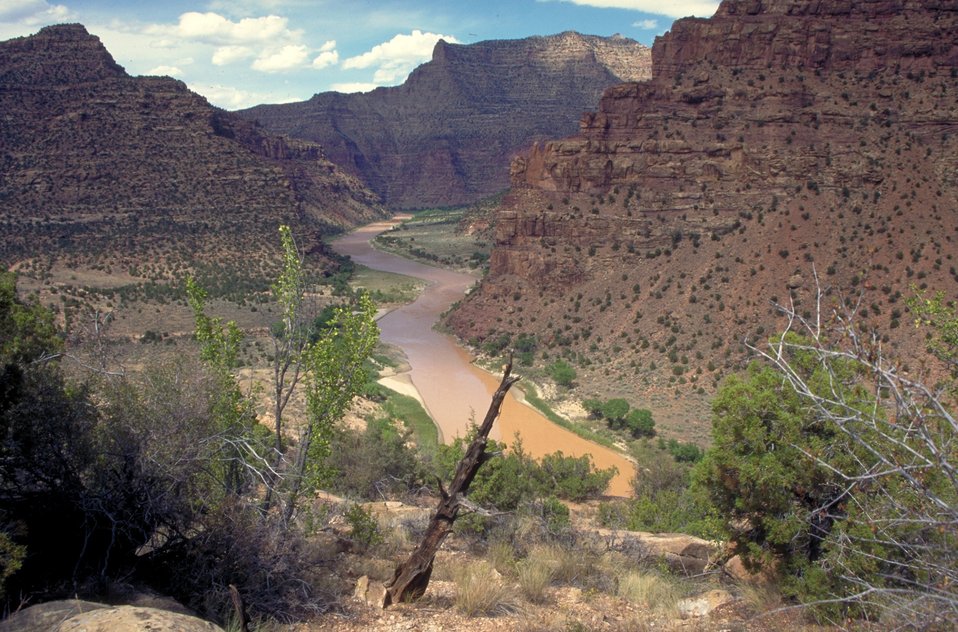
Desolation/Gray Canyons near Price, Utah.